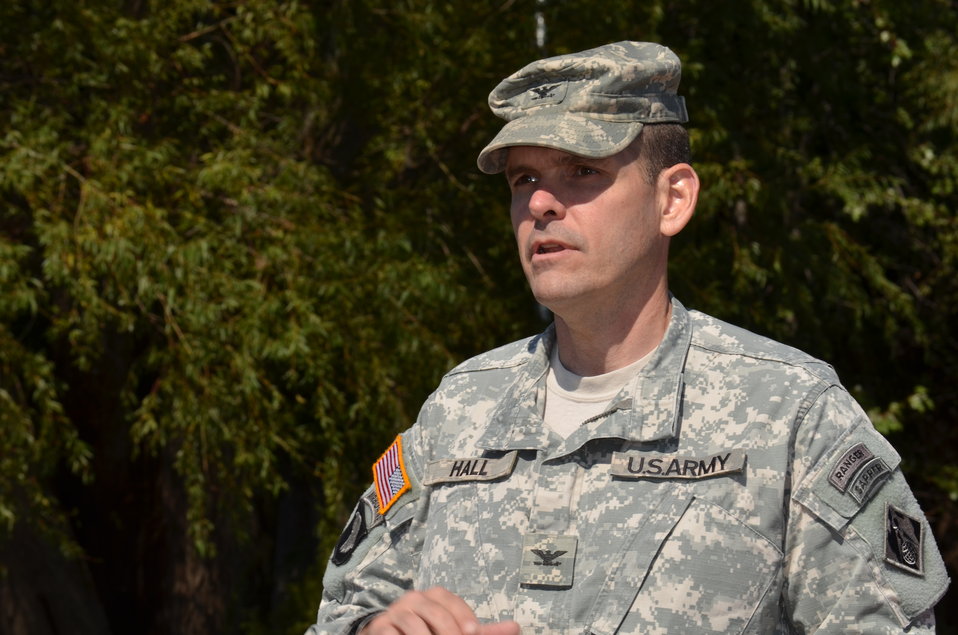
Colonel Hall

Col. Chris Hall, U.S. Army Corps of Engineers. USFWS/Ashley Spratt